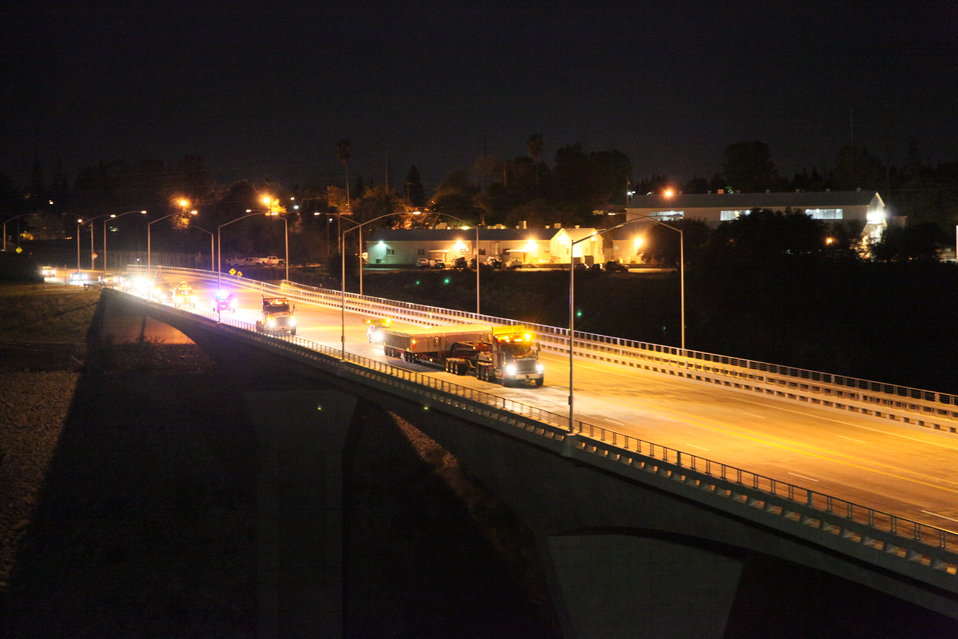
First giant gate arrives for Folsom Dam auxiliary spillway

The first of 12 giant gates for the new auxiliary spillway at Folsom Dam traverses Folsom Lake Crossing towards its final destination in Folsom, Calif., March 13, 2014, after a 600-mile journey from the Oregon Iron Works facility in Vancouver, Wash. The auxiliary spillway project is part of the Joint Federal Project, a $900-million cooperative effort to improve the safety of Folsom Dam and reduce flood risk for the Sacramento area.